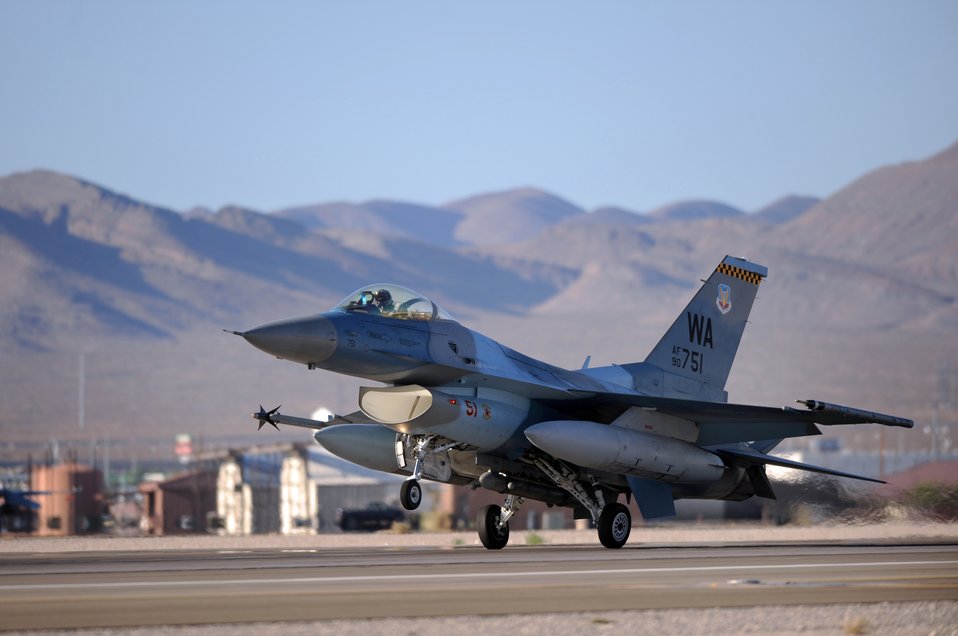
Red Flag trains combat air forces

An